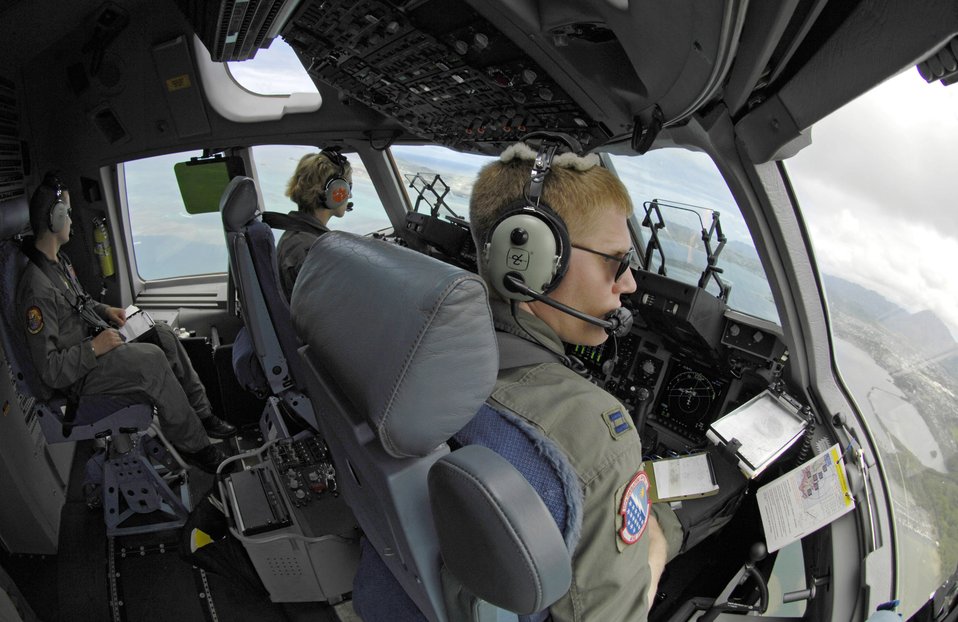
Practice makes perfect

C-17 Globemaster III pilots take turns practicing assault landings at Marine Corps Base Hawaii, Kaneohe Bay, during a local training mission May 30. The pilots are from the 535th Airlift Squadron, Hickam Air Force Base, Hawaii.